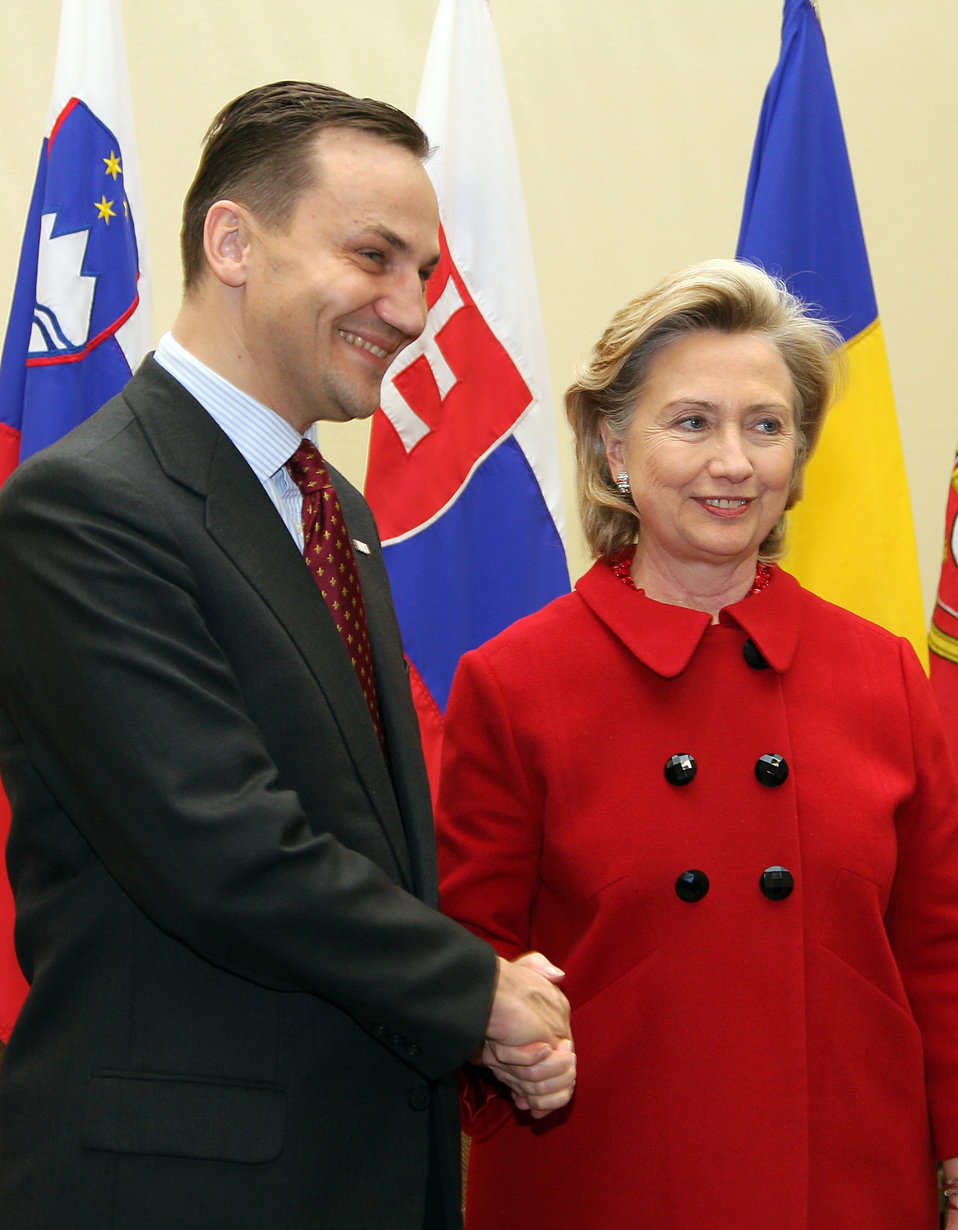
Secretary Clinton Meets With Polish Foreign Minister

U.S. Secretary of State Hillary Rodham Clinton holds a bilateral meeting with Polish Foreign Minster Radoslaw Sikorski in Brussels, Belgium December 4, 2009.